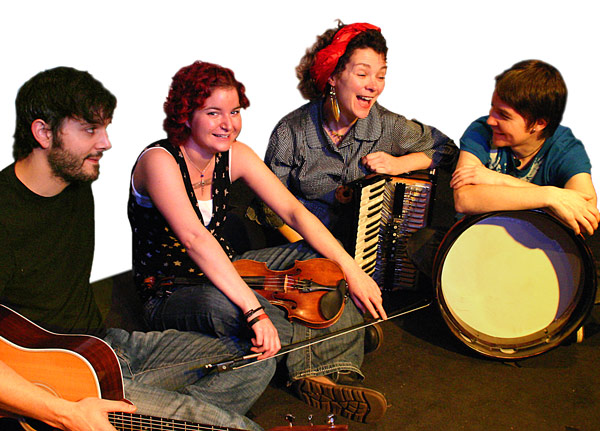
Uiscedwr, British four-piece folkrock band photographed in December 2008. Left to right are James Hickman (guitar), Anna Esselmont (fiddle), Karen Tweed (accordion) and Cormac Byrne (bodhran and percussion)